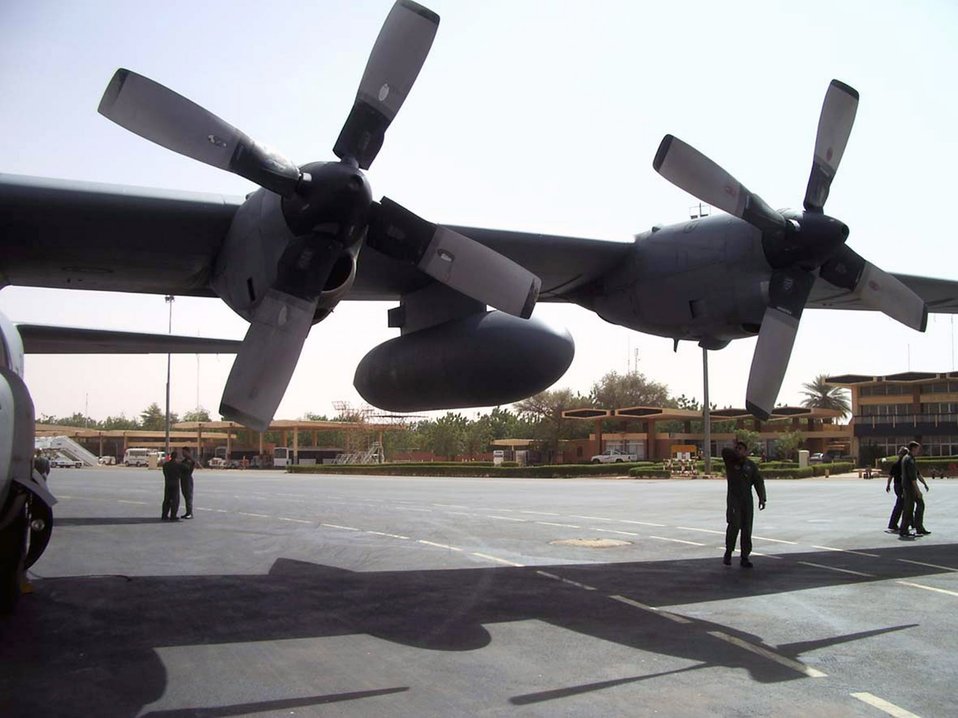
C-130 goes to Africa

Staff Sgt. Ed Lewis inspects a C-130 Hercules at a forward operating base during a mission Jan. 28 to central Africa. Sergeant Lewis is a 37th Airlift Squadron flight engineer from Ramstein Air Base, Germany.The aircraft utilized by the 37th AS in this mission were C-130E models constructed in 1963 and veterans of nearly every conflict America has faced in the ensuing 45 years.